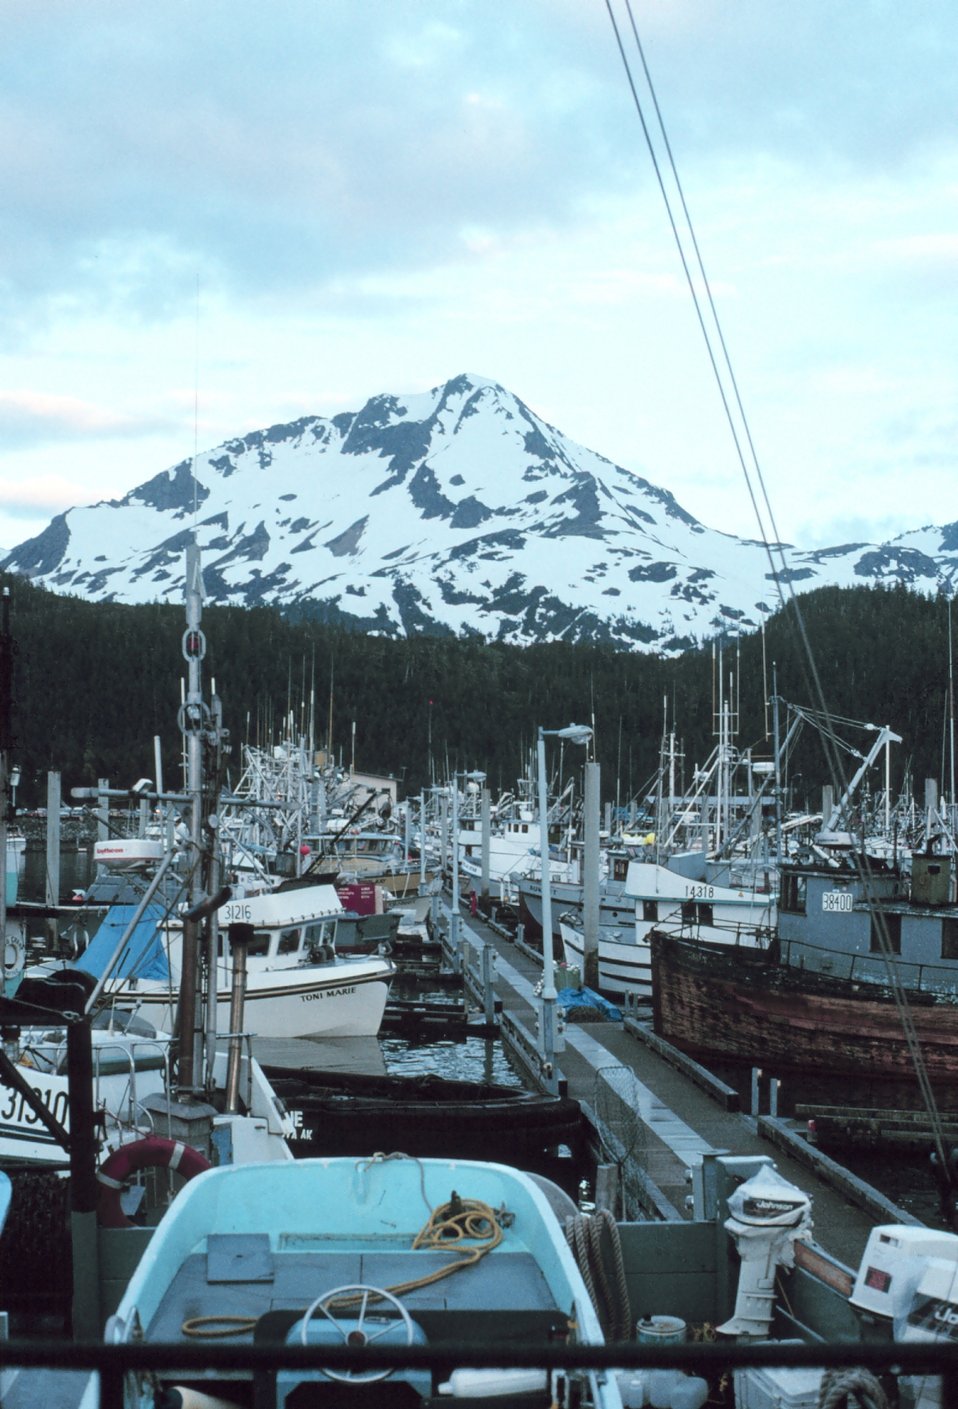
Fishing boats at Cordova